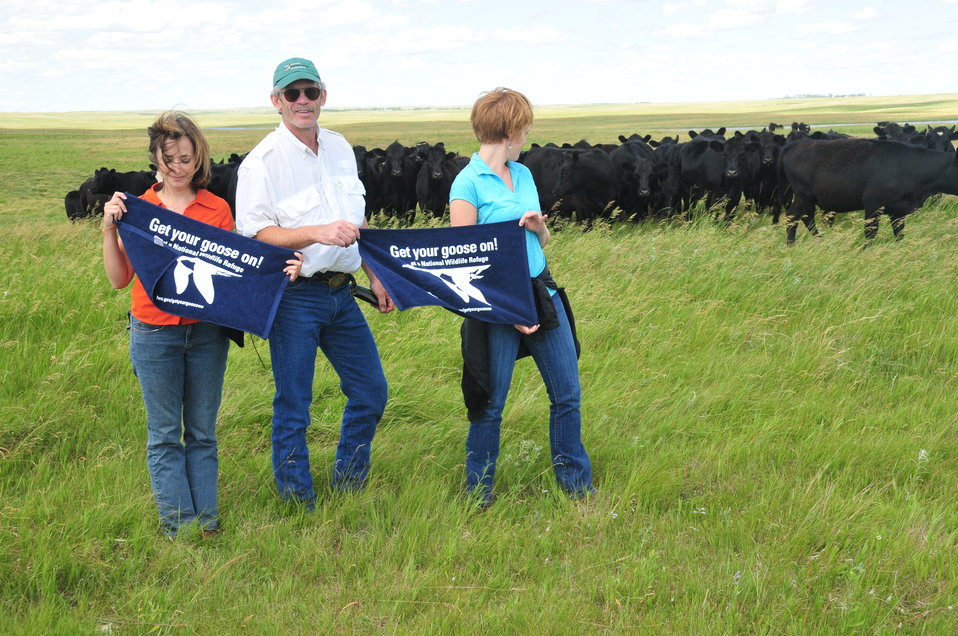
Get Your Goose On!

The national meeting for regional chiefs of the National Wildlife Refuge System is held three times a year in different locations around the country. This 2012 meeting took place in McPherson County, South Dakota, and focused on the Dakota Grassland Conservation Area.

This photo was taken on the Wade Weiszharr and Family Ranch, which contains perpetual U.S. Fish and Widlife grassland and wetland easements. This site is also located in the heart of Prairie Pothole Region, making it extremely productive migratory bird habitat and a great place to “Get your goose on!”

Marsha Pradines, Mark Chase and Serena Selboe 'get their goose on' while a herd of cattle graze the unique grasslands of the Wade Weiszharr Family Ranch behind them.